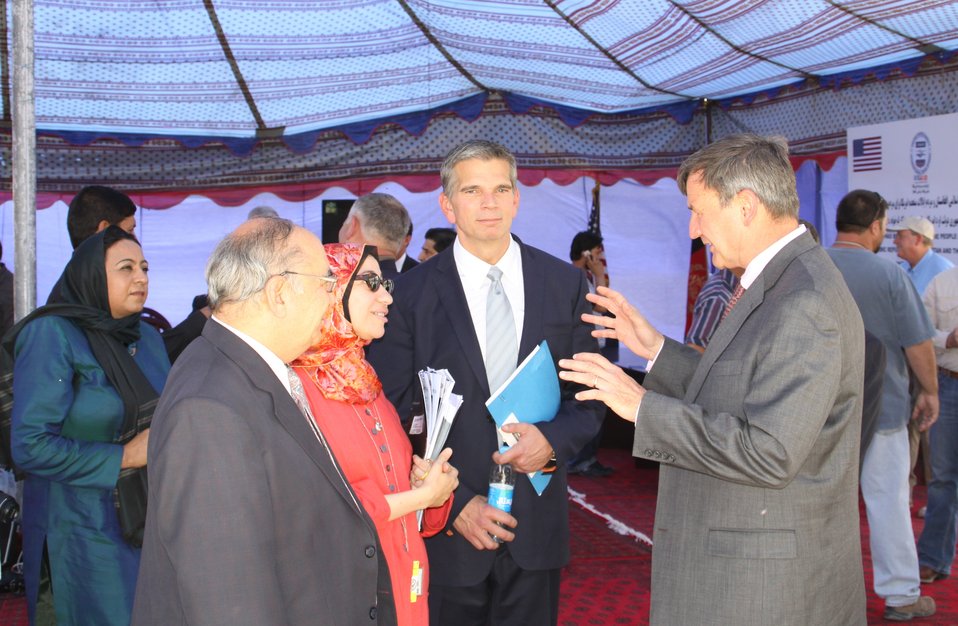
105 MW Tarakhil Power Plant Handover